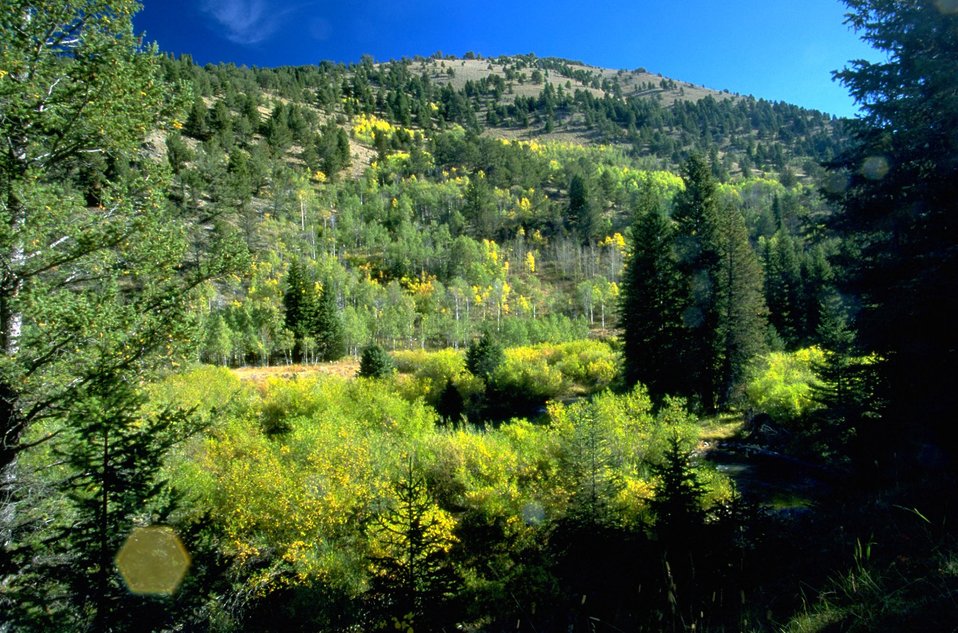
Forested mountain slopes